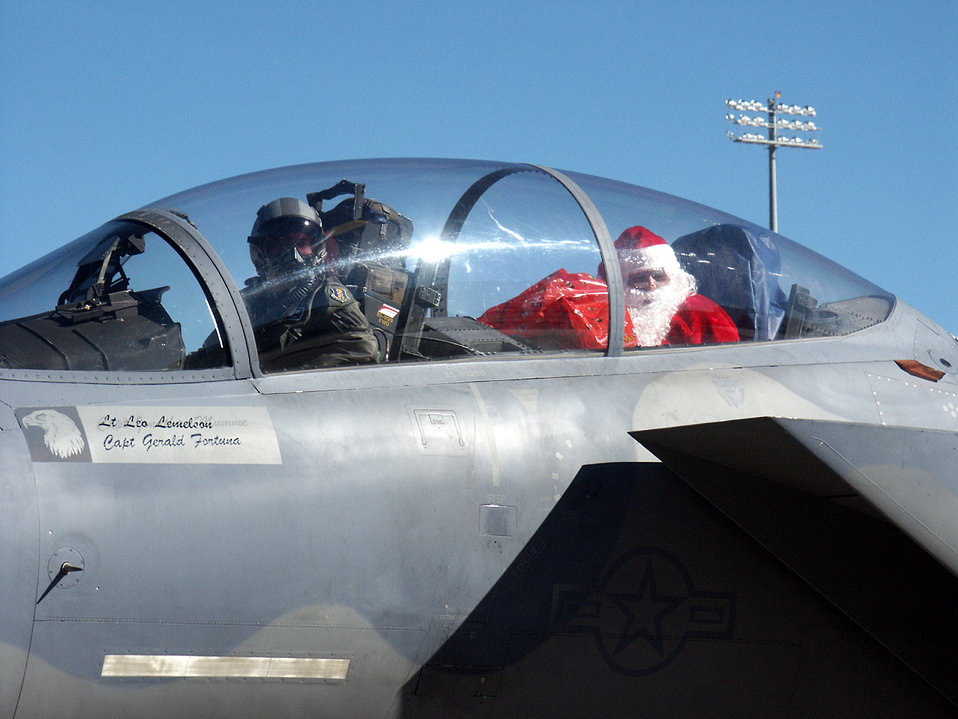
Special delivery

EGLIN AIR FORCE BASE, Fla. -- Capt. Jeffrey Stands delivers Santa Claus to the 33rd Fighter Wing family Christmas party Dec. 20. Stands is a pilot with the 58th Fighter Squadron.